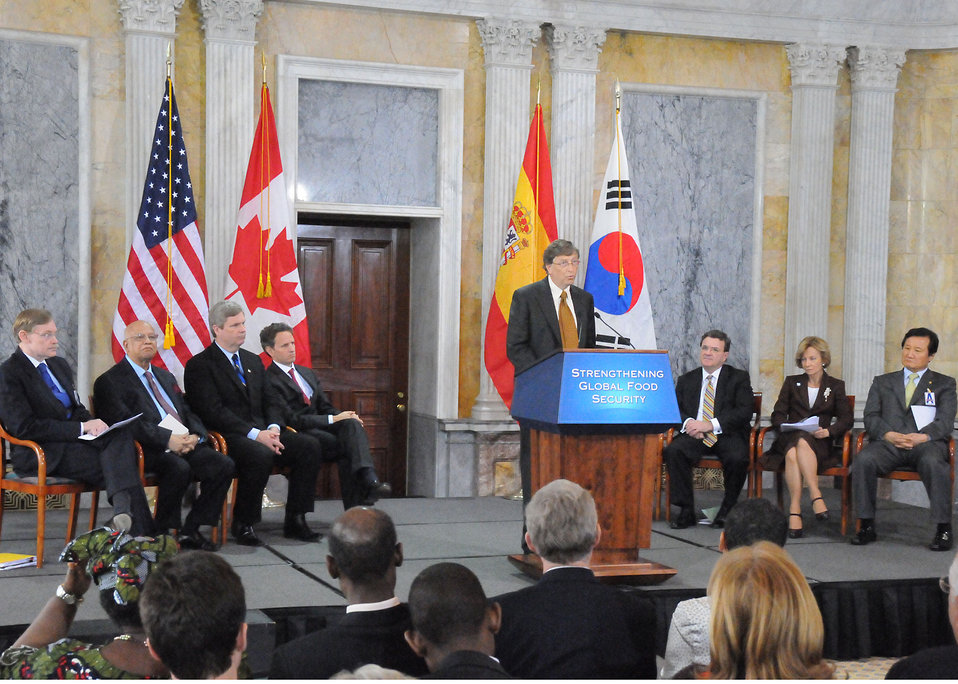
Co-chair of the Bill and Melinda Gates Foundation Bill Gates makes remarks at the Strengthening Global Food Security conference held at the Treasury Department in Washington, D. C., on Thursday, Apri 22, 2010. (Seated L to R behind Mr. Gates are World Bank President Robert Zoellick, Bangladesh Finance Minister Abdul Muhith, Agriculture Secretary Tom Vilsack, Treasury Secretary Tim Geithner, Canadian Finance Minister James Flaherty, Spanish Second Vice President and Minister of Finance Elena Salgado, and South Korean Finance Minister Yoon Jeung-Hyun) USDA photo 10di1325-178